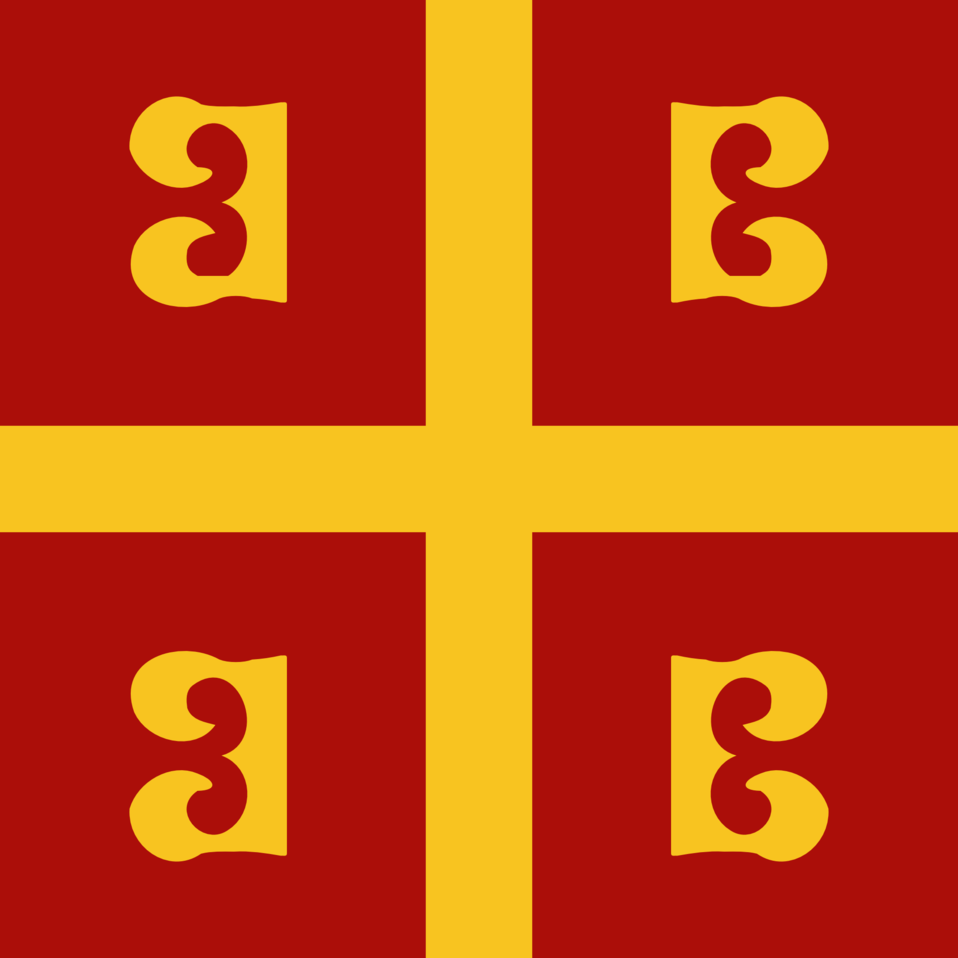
Flag of the Palaiologos dynasty with the imperial coat of arms (1259-1453). The four Bs, or Fire Steles (Greek: ΠυÏ�εκβόλα - Pyrekvola), represent the initials of the family's motto King of Kings, Ruling Over Rulers (Greek: ΒασιλεÏ�ς Βασιλέων, ΒασιλεÏ�ων Βασιλευόντων - Vasilefs Vasileon, Vasilevon Vasilevonton). The initials were added to the family's original Arms after the ascent of Michael VIII Palaeologus to the imperial throne. Gules, a cross and four Bs Or.